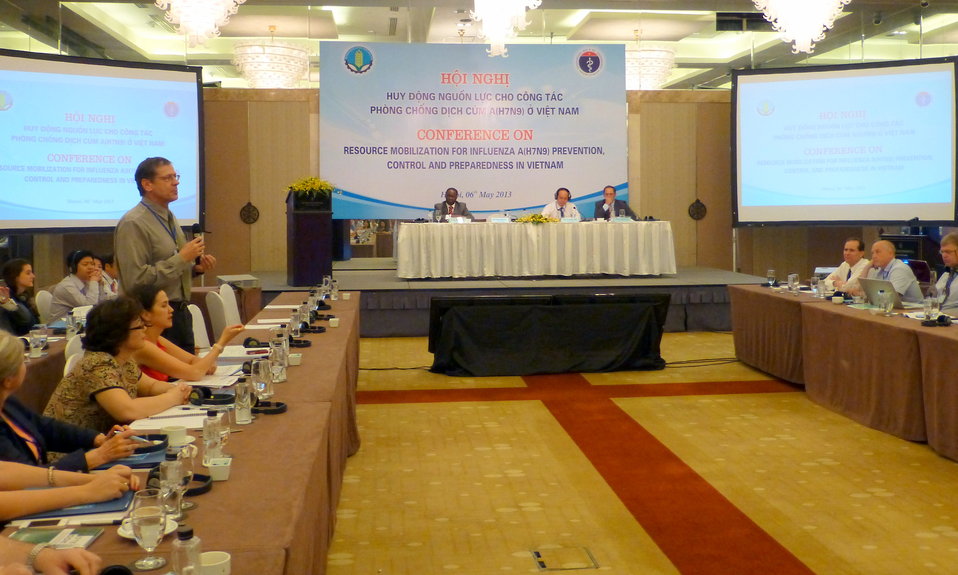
Dr. Tim Meinke, USAID, speaks at the Conference on Resource Mobilization for Influenza A (H7N9) Prevention, Control and Preparedness in Vietnam

Hanoi, May 6, 2013
Supported by USAID Vietnam